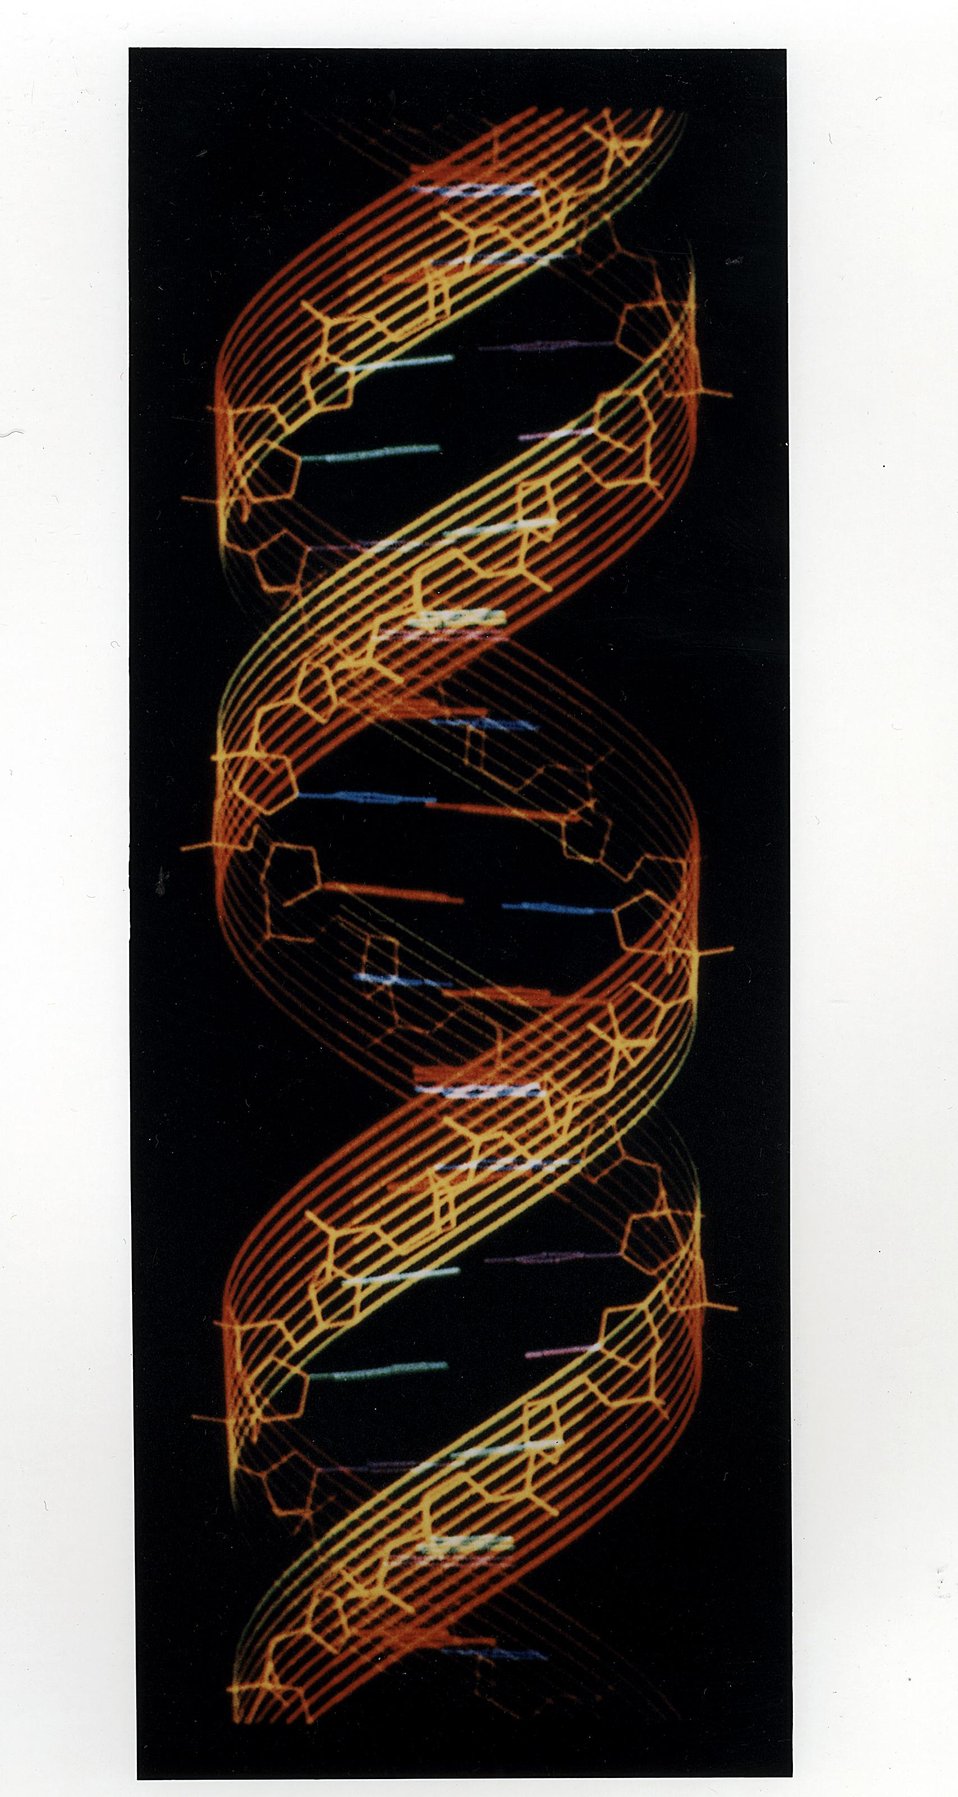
The Structure of the Genetic Script. In the body, DNA usually takes the form of a highly regular double-stranded helix, shown here in a computer-generated reconstruction.